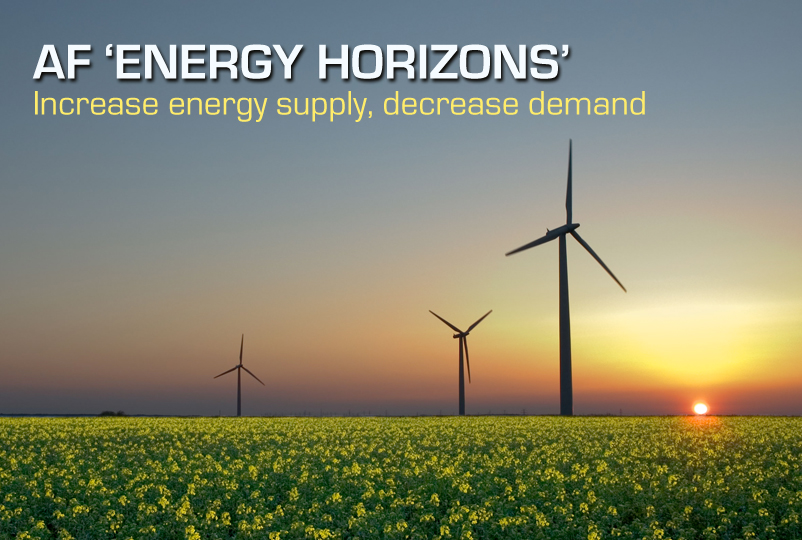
AF 'Energy Horizons'